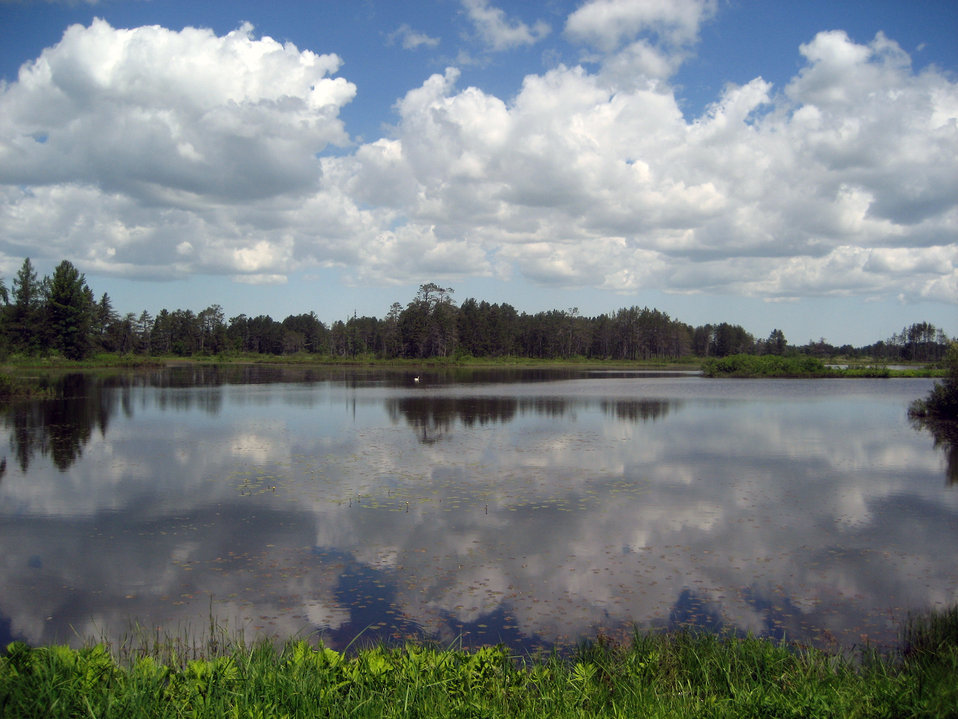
Reflections at Seney National Wildlife Refuge

Seney National Wildlife Refuge.